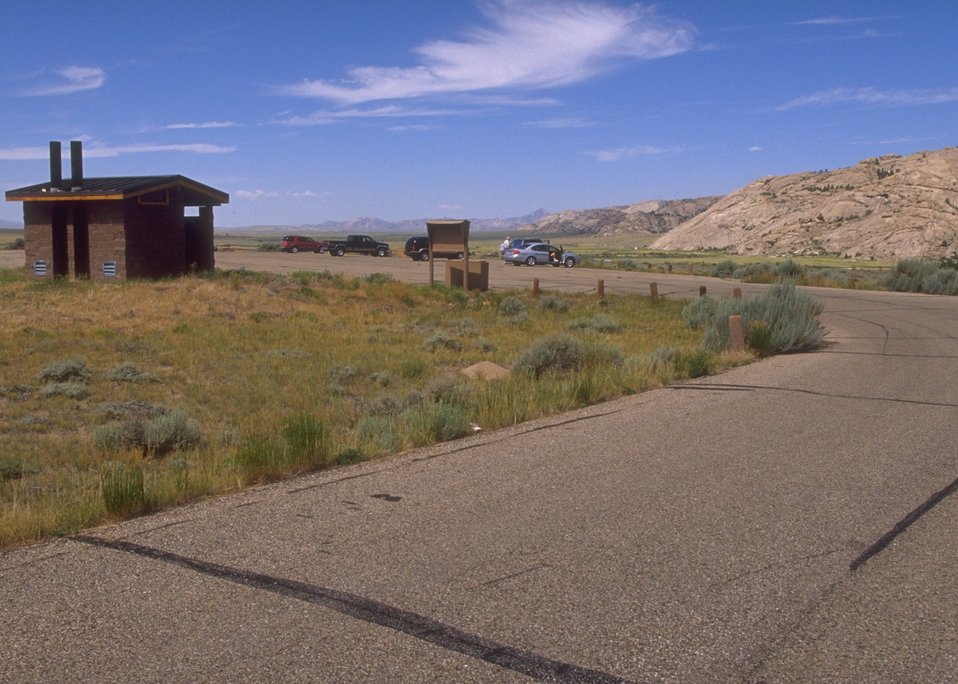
Devil's Gate BLM interpretive site along the Oregon & Mormon Trail, Rawlins Field Office